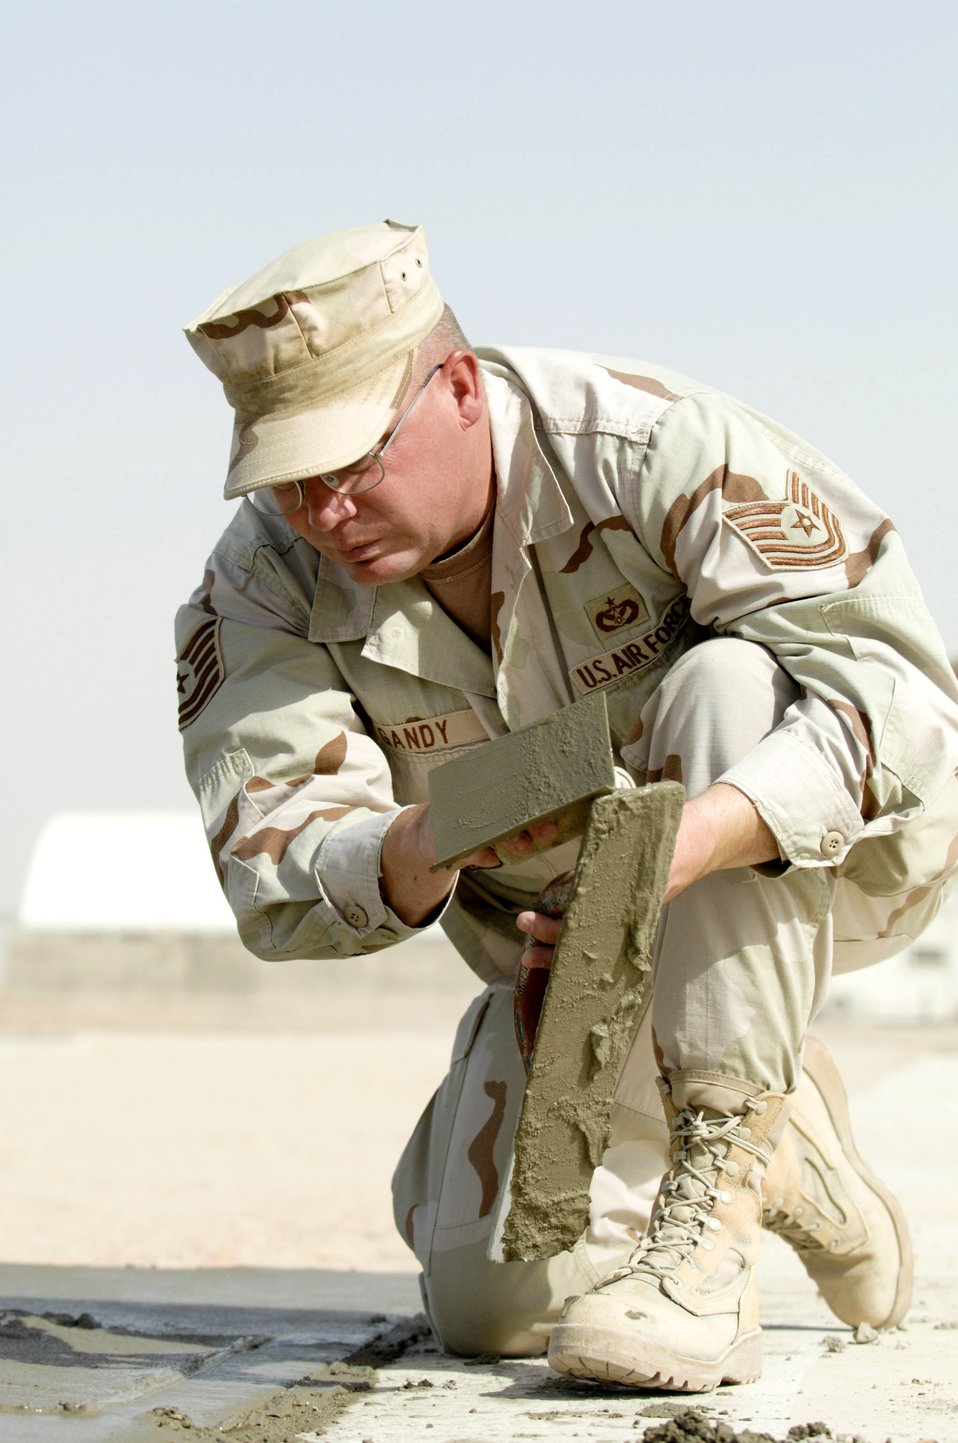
Civil engineers pave the way for Iraqi Army

Tech. Sgt. Michael Grandy edges and floats freshly poured cement while his team builds a drill pad at Camp Mittica, Iraq, June 11. Sergeant Grandy is assigned to the 407th Expeditionary Civil Engineer Squadron at Ali Air Base, Iraq. The team is on the Iraqi base constructing a cement drill pad that will be used by the Iraqi army to train their enlisted soldiers.